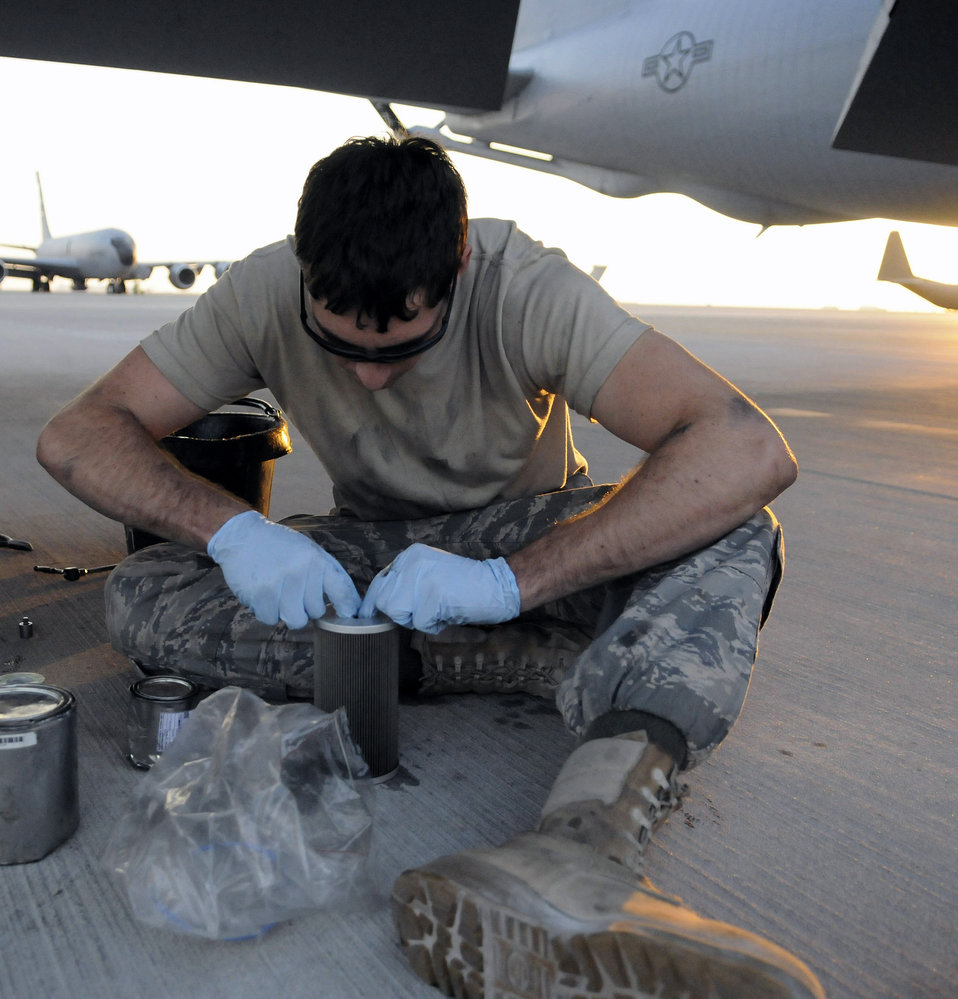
Engine tune up

Airman 1st Class Alexander Lesch works a new seal into place on a fuel filter during a 120-hour inspection on a KC-135 Stratotanker engine Nov. 20 at an air base in Southwest Asia. KC-135s provide the core aerial refueling capability for the Air Force and support to Navy, Marine Corps and allied nation aircraft in the U.S. Central Command area of responsibility. Airman Lesch is a native of Burlington, Wis., and is deployed from Grand Forks Air Force Base, N.D. He is assigned to the 379th Expeditionary Aircraft Maintenance Squadron.